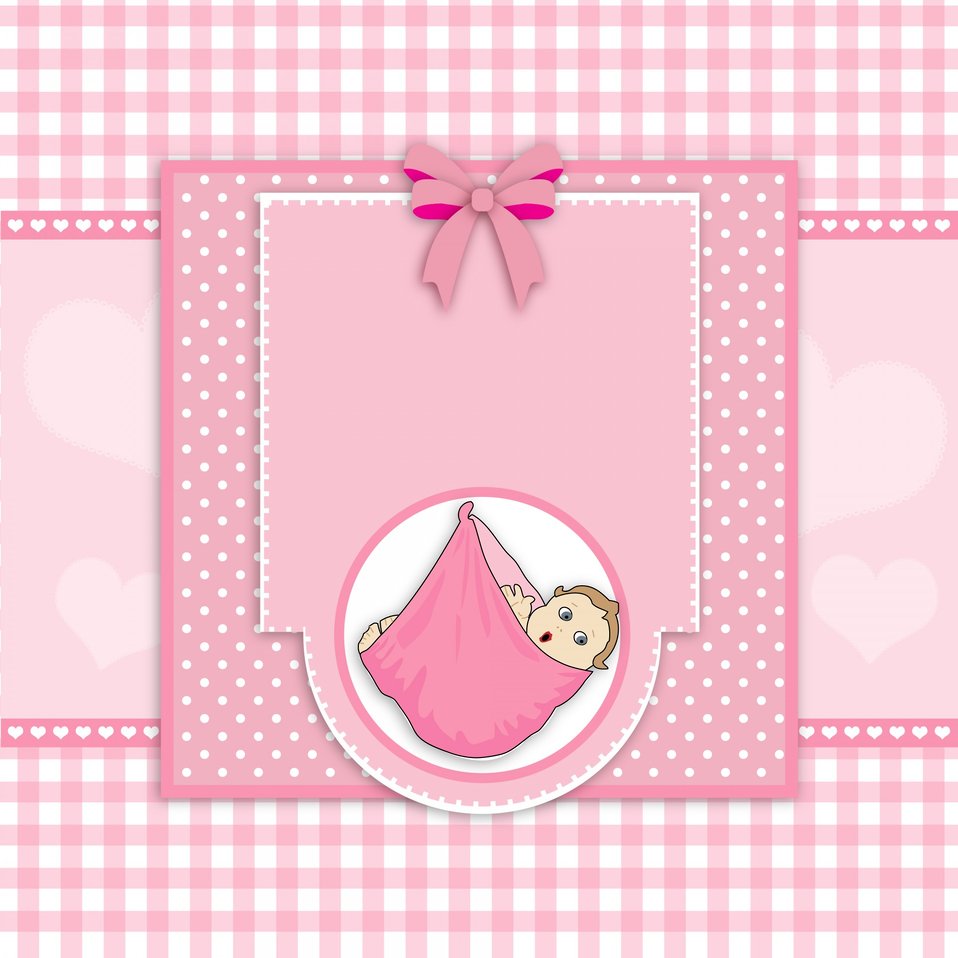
Baby girl card cute

Cute baby girl arrival card template with frame of pink white checks and hearts.